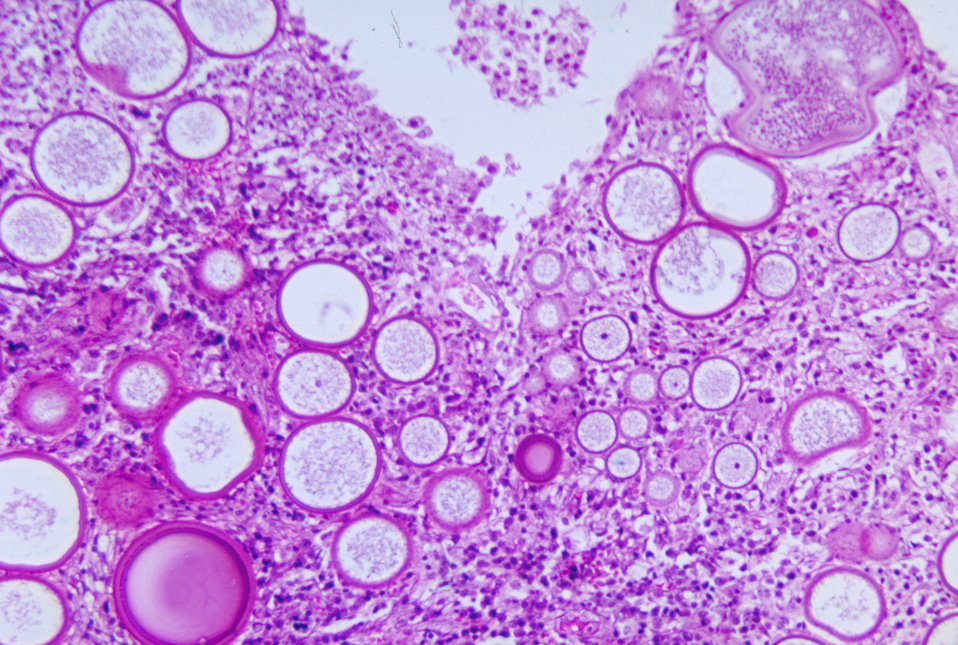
This micrograph depicts rhinosporidiosis of the nose with the presence of numerous trophocytes of Rhinosporidium seeberi.